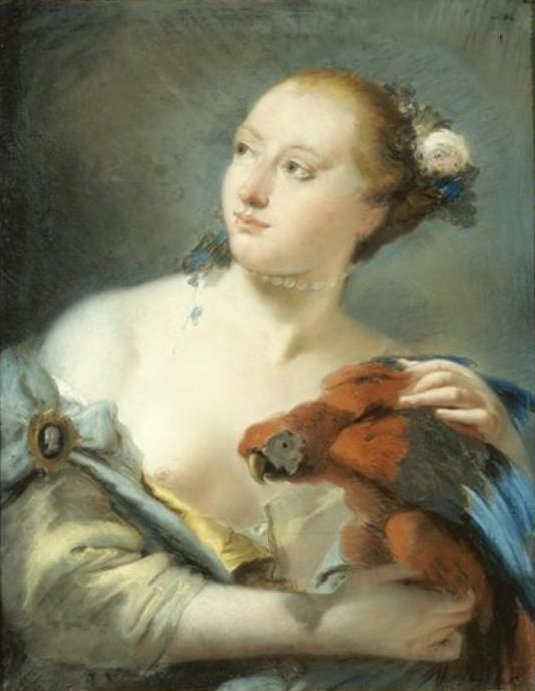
'Young Woman with a Parrot', pastel drawing attributed to Lorenzo Tiepolo, 1762, El Paso Museum of Art